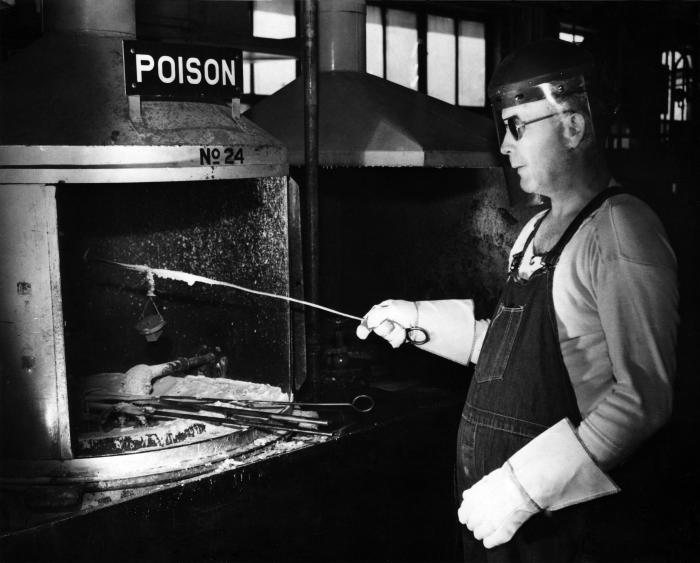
This historic image, provided by the Center for Disease Control's (CDC), National Institute for Occupational Safety and Health (NIOSH), depicted an industrial worker who was in the process of heating an unknown substance inside a ventilated oven marked 'POISON'. It appeared that a crucible, which was hanging from a metal rod held by the worker, was the canister that held the poison. The man was wearing dark eyeglasses, a transparent face shield, heavy-duty gloves, and an apron. However, he was wearing no filtered breathing mask, which would have prevented the inhalation of possible toxic fumesIn gaining a better understanding of workplace hazards, through hands-on and on-site information acquisition, protocol-formulating bodies such as NIOSH, are better able to create a safer workplace through substantiation of appropriate safety regulations.